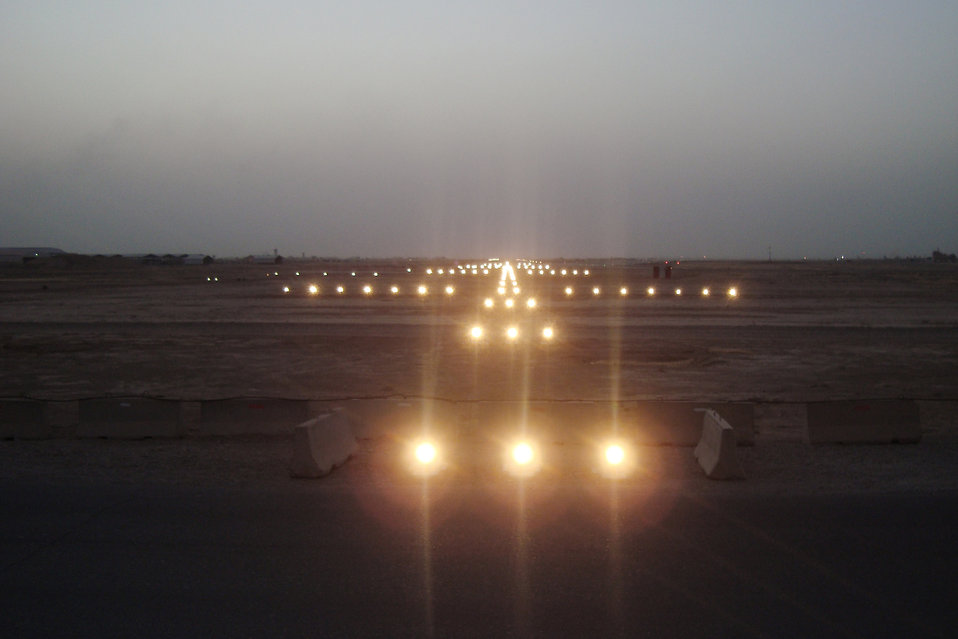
Follow me in

Runway approach lights, along with a digital airport surveillance radar system, various navigational aids and other equipment, were part of the suite of equipment officially turned over to the Iraqi air force Oct. 26, 2009, at Kirkuk Air Base. The Electronic Systems Center at Hanscom Air Force Base, Mass., provided the equipment via foreign military sales procedures.